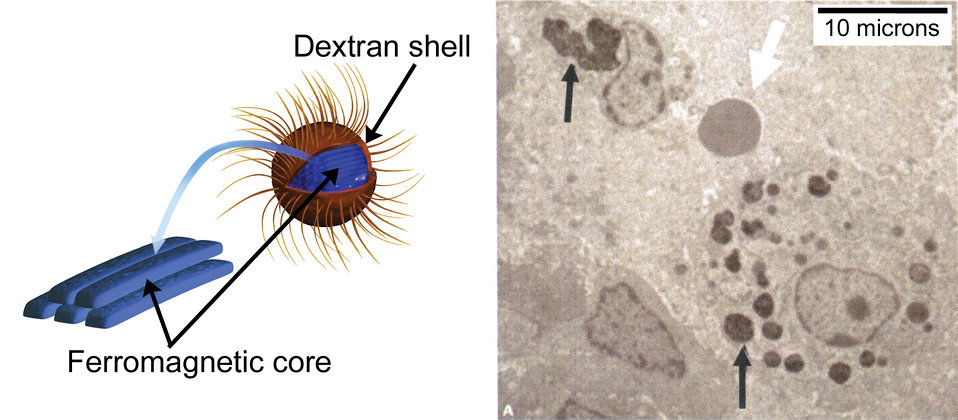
Nanoparticles; Medicine

An iron-centered nanoparticle (left) analyzed at NIST's Center for Neutron Research has a coating of the sugar dextran, whose tendrils prevent groups of the particles from clumping. When tumor cells ingest them (right), the particles still congregate closely enough to share heat when stimulated by a magnetic field, killing the cells. White arrow indicates a red blood cell.